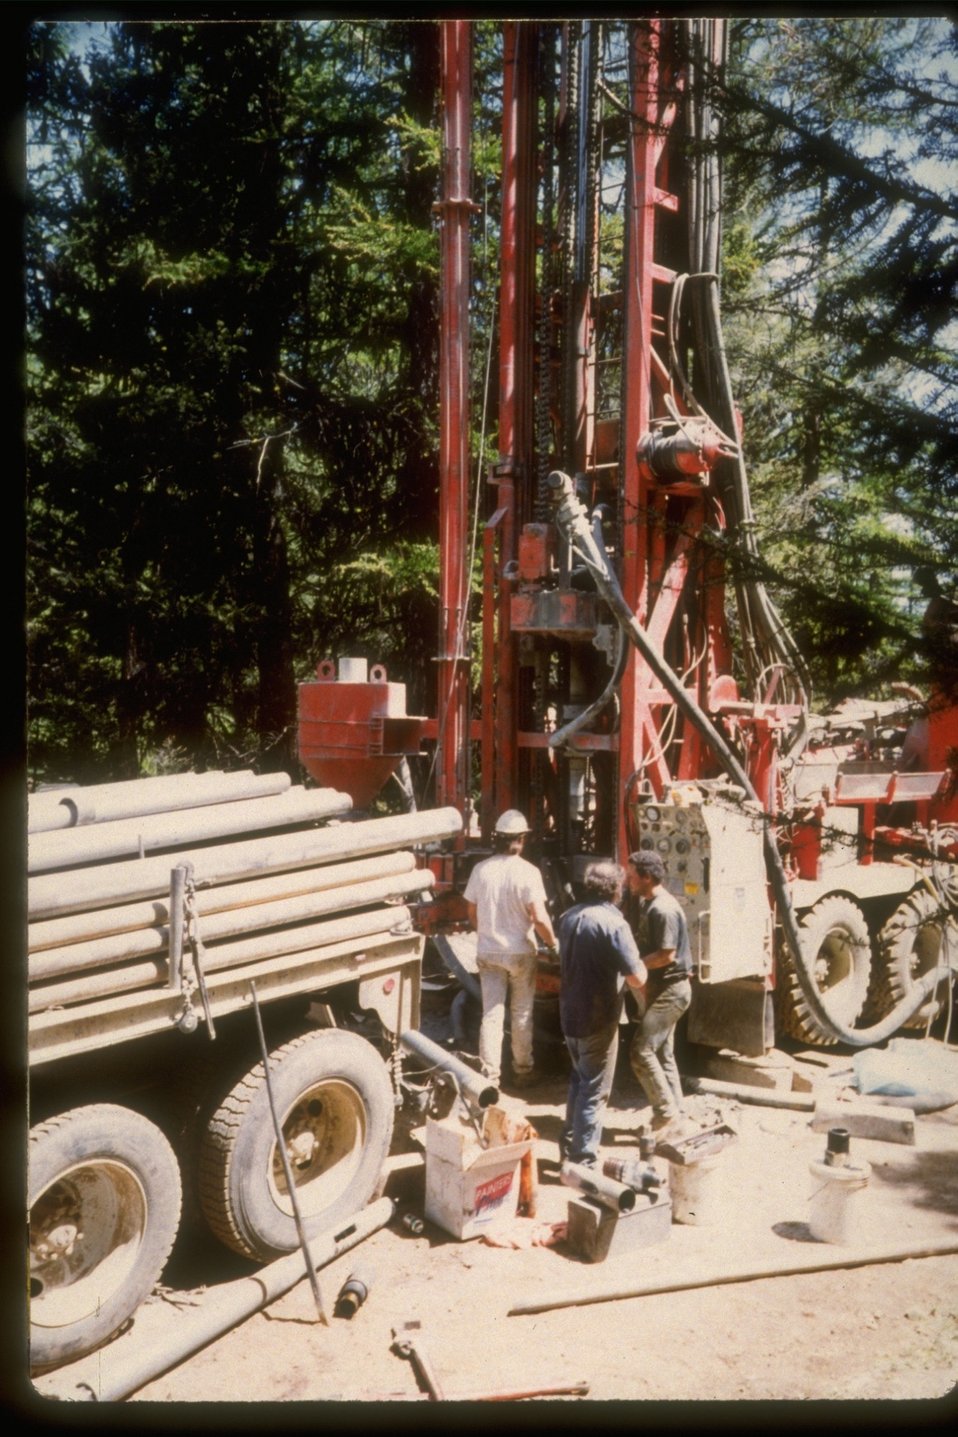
Reverse circulation exploration drillrig at Crown Jewel Project, Okanogan County, Washington.